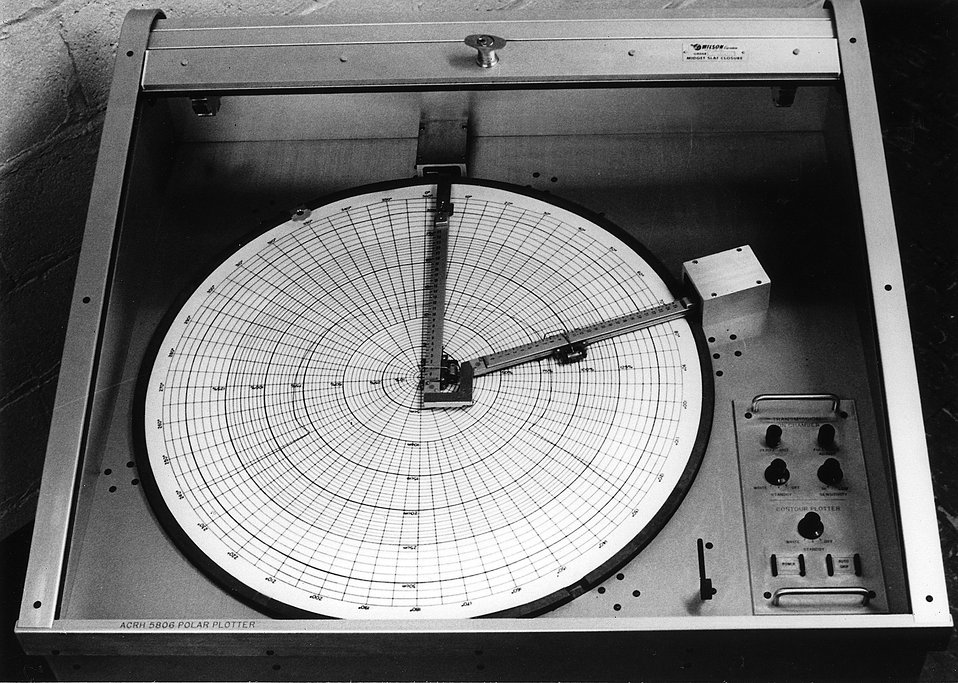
Automatic Patient Contour Plotter....Before radiation treatment of cancer.